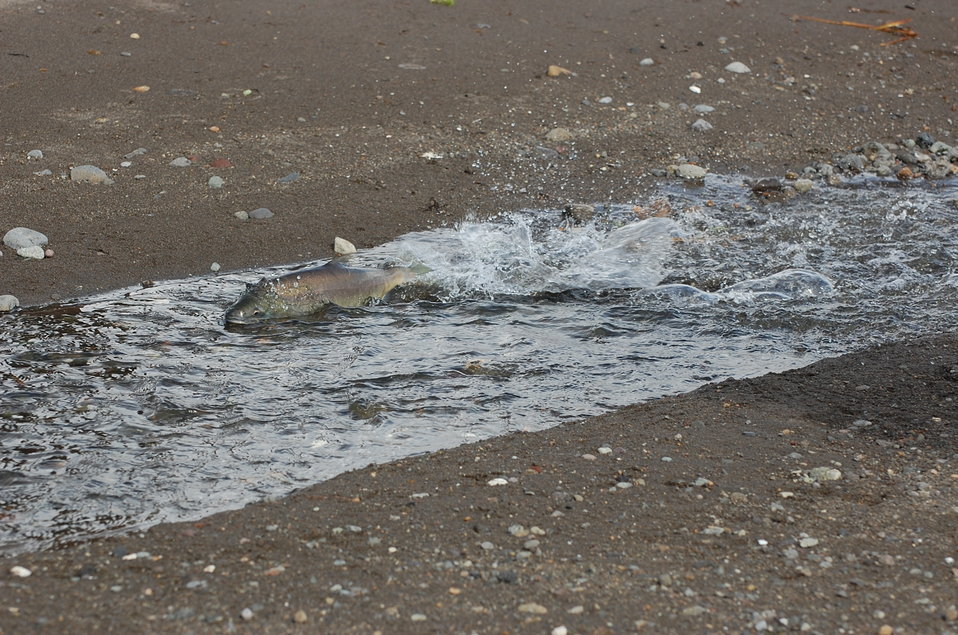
Pink Salmon at Cold Bay

Izembek National Wildlife Refuge